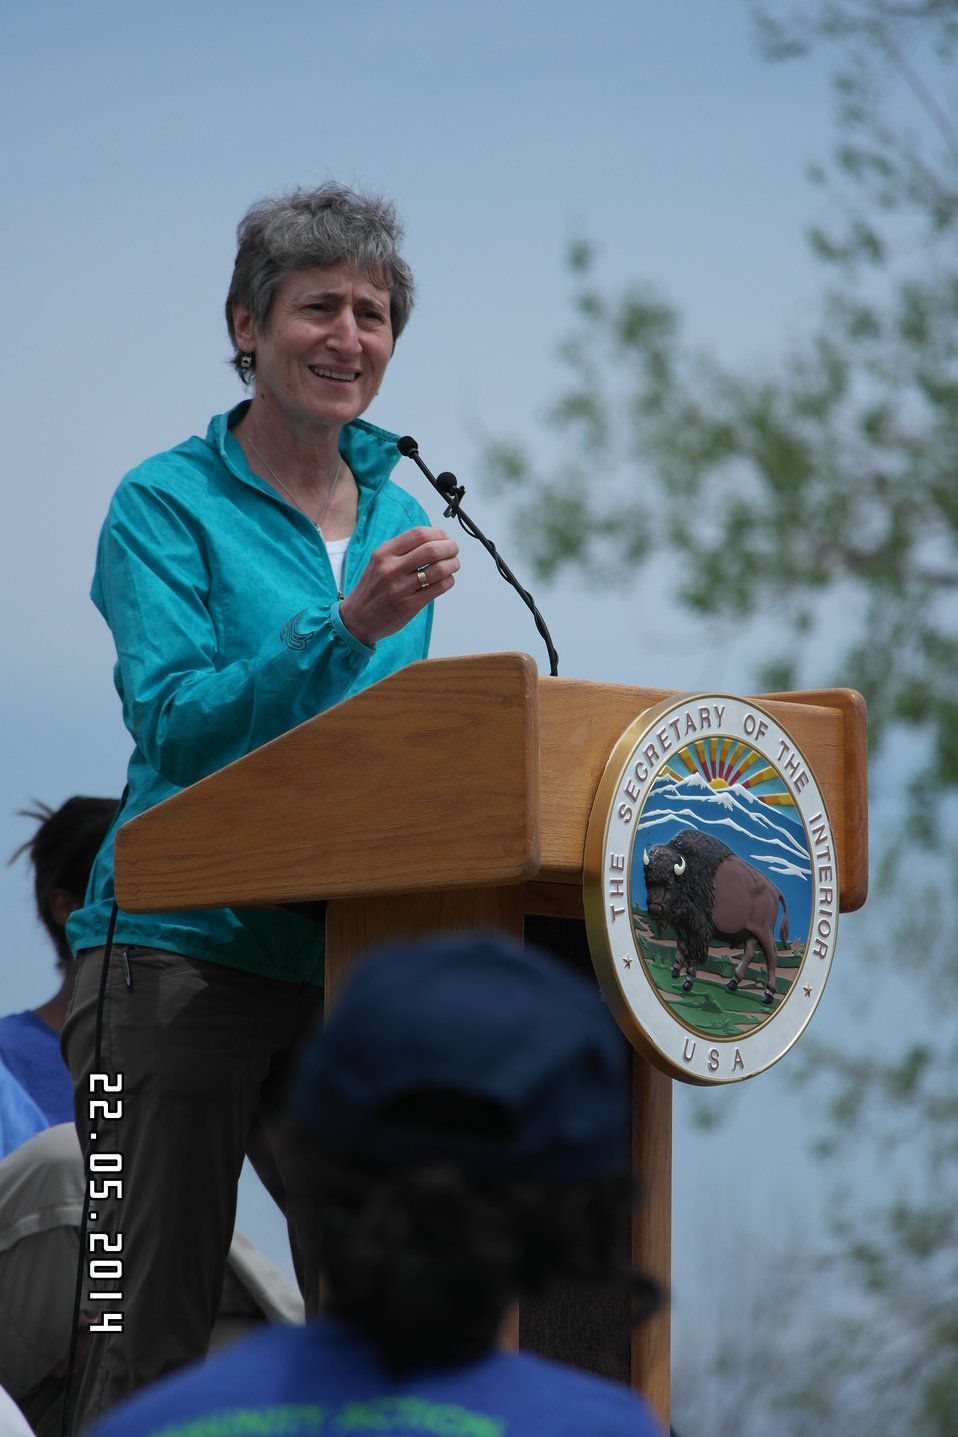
Secretary Jewell Announces $6.7 for Youth Conservation Jobs

Jewell made the announcement at an event at Rocky Mountain Arsenal National Wildlife Refuge outside Denver, Colorado, where she was joined by U.S. Department of Agriculture (USDA) Deputy Under Secretary for Natural Resources and the Environment Arthur “Butch” Blazer; Greg Knadle, Vice President for Government Relations of the National Fish and Wildlife Foundation (NFWF); Refuge Manager David Lucas and youth corps members of Groundwork Denver.